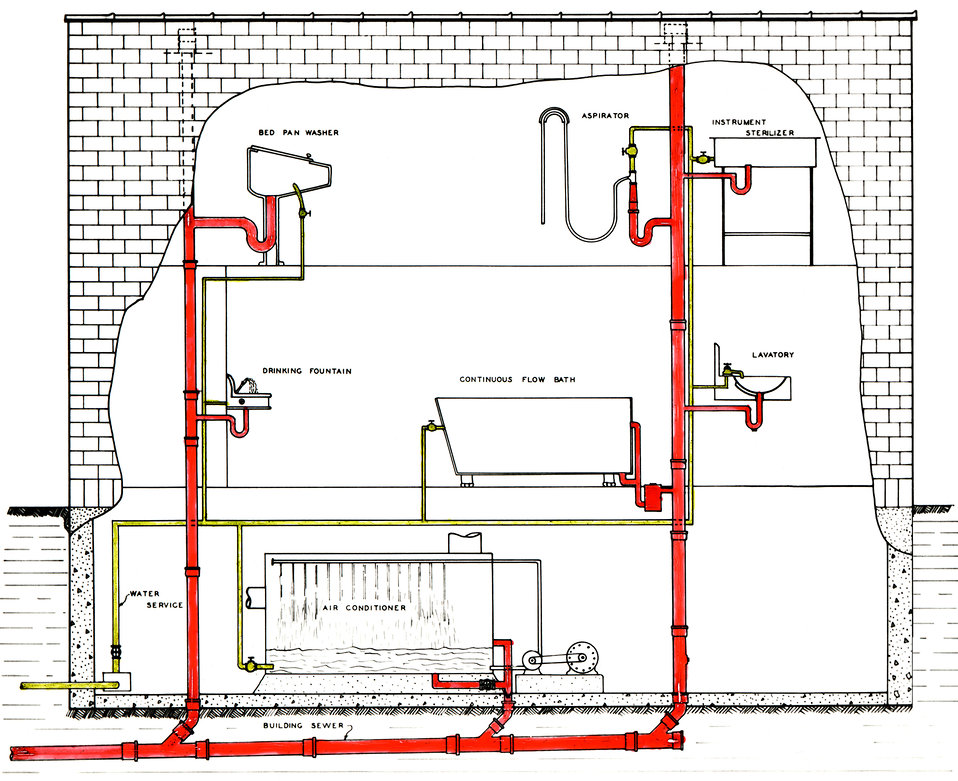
This historic diagram depicted an example of a hospital's unsatisfactory plumbing configuration. This cross-section of the building, and its water intake and outflow points, showed a hazardous cross-connection between the potable water supplies and the sewage waste water disposal system. The light-green lines represented water intake. The red lines represented waste water disposal lines running into the building sewer line at the bottom of the diagram.